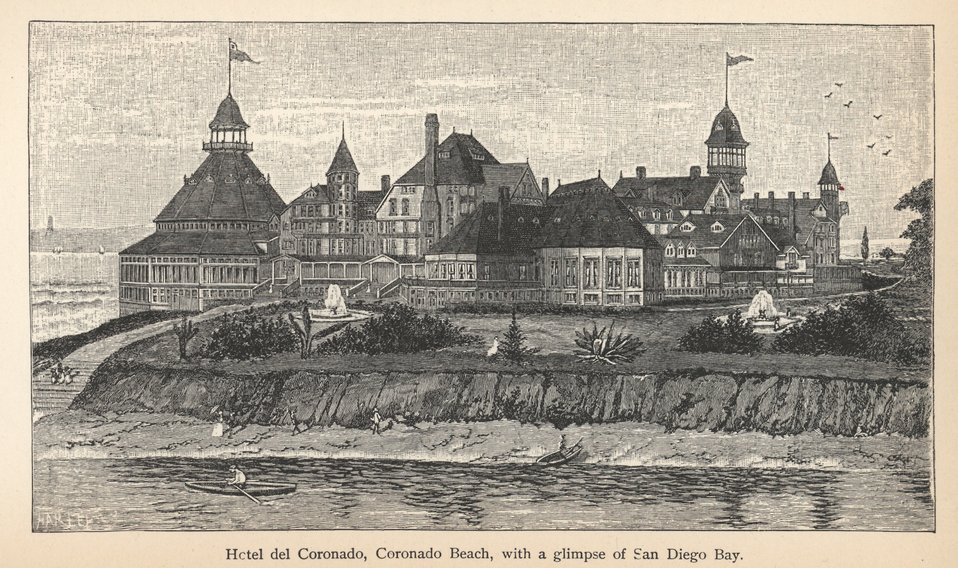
Hotel del Coronado, built in 1888, still a San Diego landmark In: 'California of the South' by W. Lindley and J.P. Widney. 1896. Call No. C/gf04 L74.